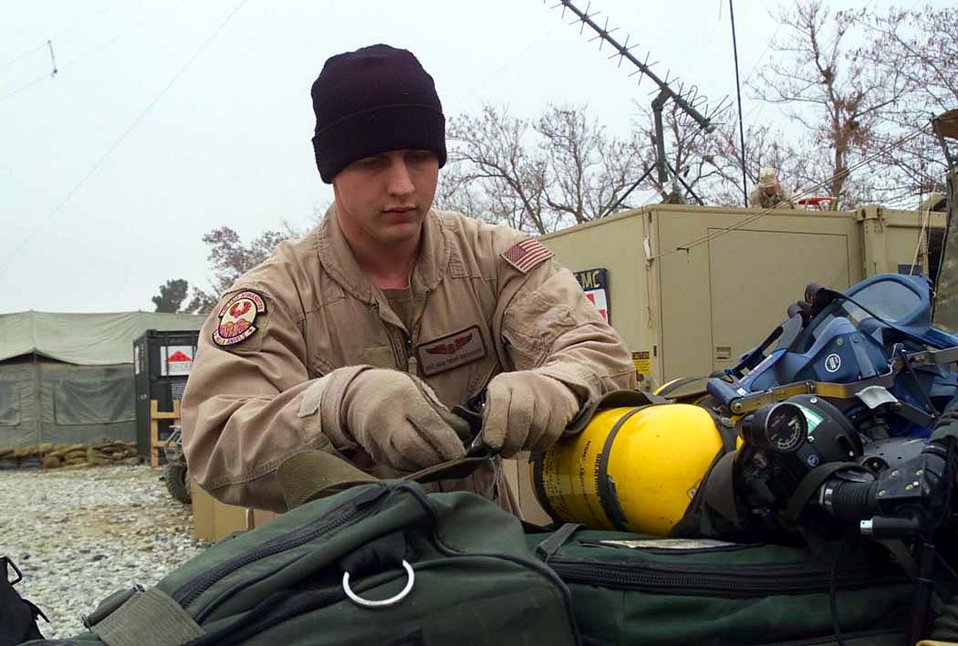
Care in the air

OPERATION ENDURING FREEDOM -- Staff Sgt. Michael Broughman secures his team's medical equipment for flight. Broughman is an aeromedical evacuation technician with the 438th Expeditionary Aeromedical Evacuation Squadron at Bagram Airfield, Afghanistan. The squadron is responsible for evacuating sick and injured patients to definitive care facilities using fixed-wing aircraft.